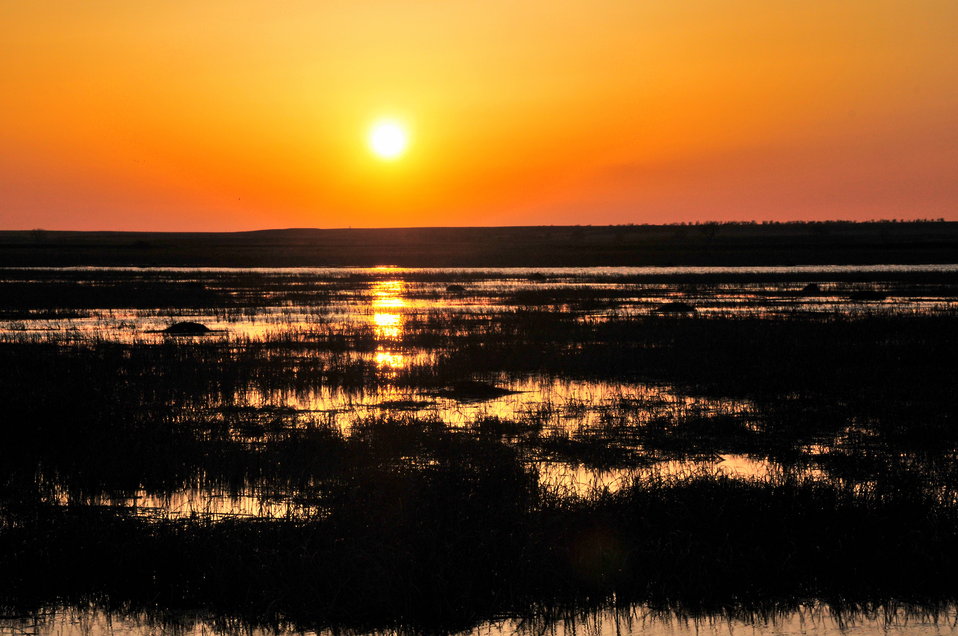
Sunset over Pool 8 at Lacreek National Wildlife Refuge

Sunset colors glow over Pool 8 at Lacreek National Wildlife Refuge in South Dakota.